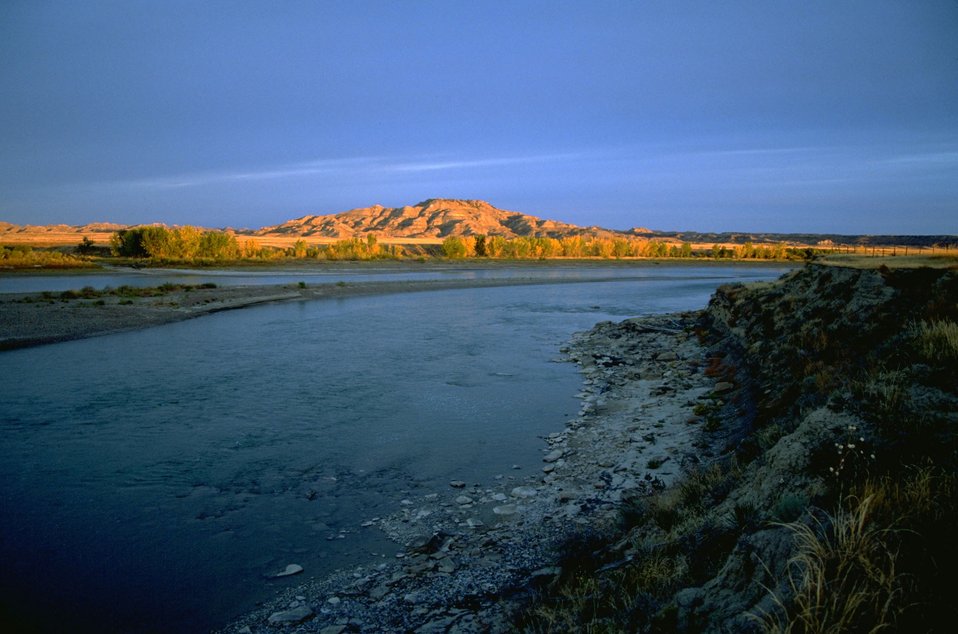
Sheridan Butte in the Terry Badlands Wilderness Study Area. Yellowstone River in the foreground